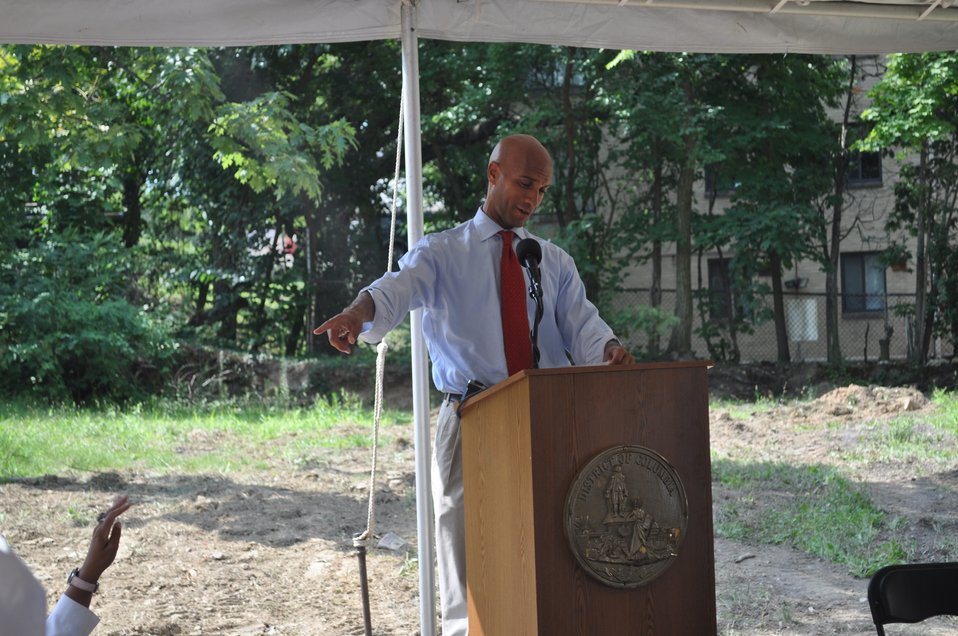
Treasurer Rios at a groundbreaking on new Vida Senior Residence funded in part by the Recovery Act, 7/27/2010

D.C. Mayor Fenty speaking at the groundbreaking event for the Vida Senior Residences.